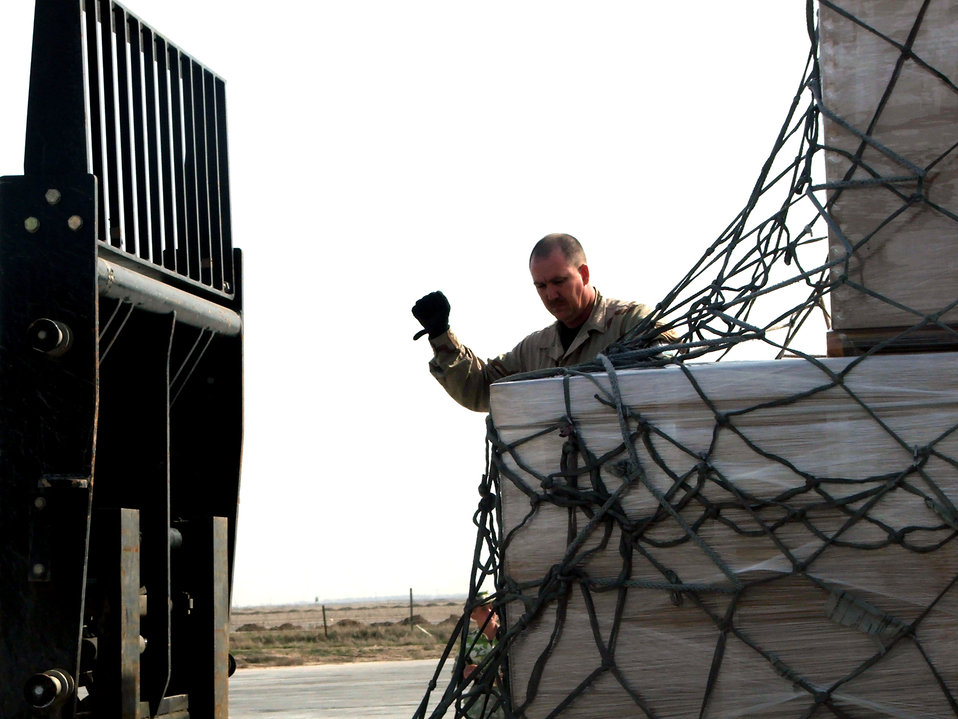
Air terminal operators keep OEF freight, passengers moving

KARSHI-KHANABAD AIR BASE, Uzbekistan -- Tech. Sgt. Bringham Norman guides a forklift into place while moving a pallet filled with mail here recently. He is an air transportation craftsman with the 416th Expeditionary Mission Support Squadron's Air Terminal Operations Center from Maxwell Air Force Base, Ala.